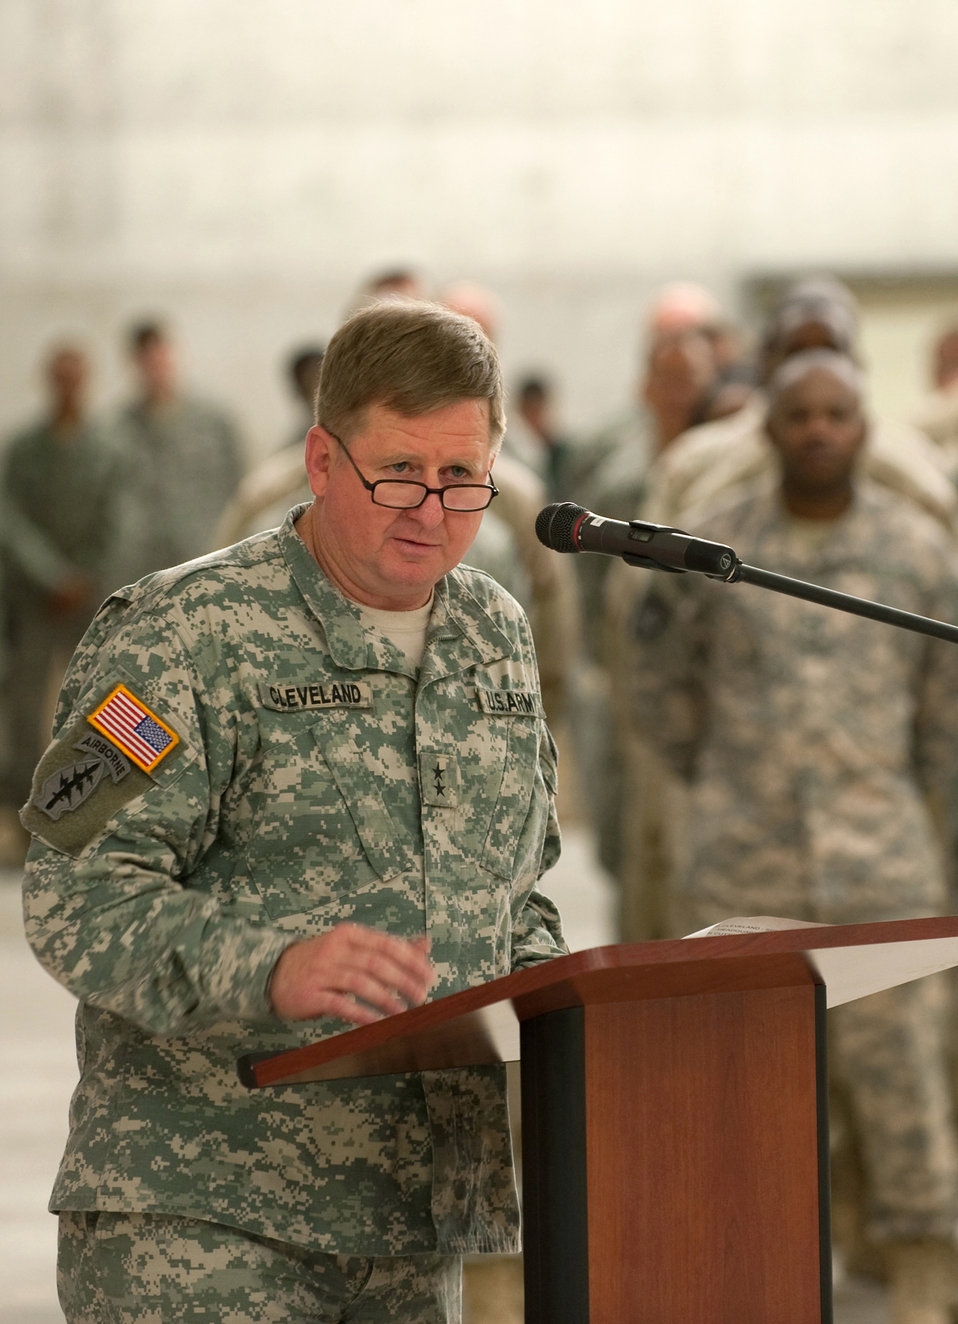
Special Ops Command Central opens new headquarters

Army Maj. Gen. Charles Cleveland speaks to the audience at a ribbon-cutting ceremony for the new Special Operations Command Central main headquarters July 29 in Southwest Asia. SOCCENT officials plan, prepare and direct special operations missions in support of operations Iraqi Freedom and Enduring Freedom. General Cleveland is the SOCCENT commander.